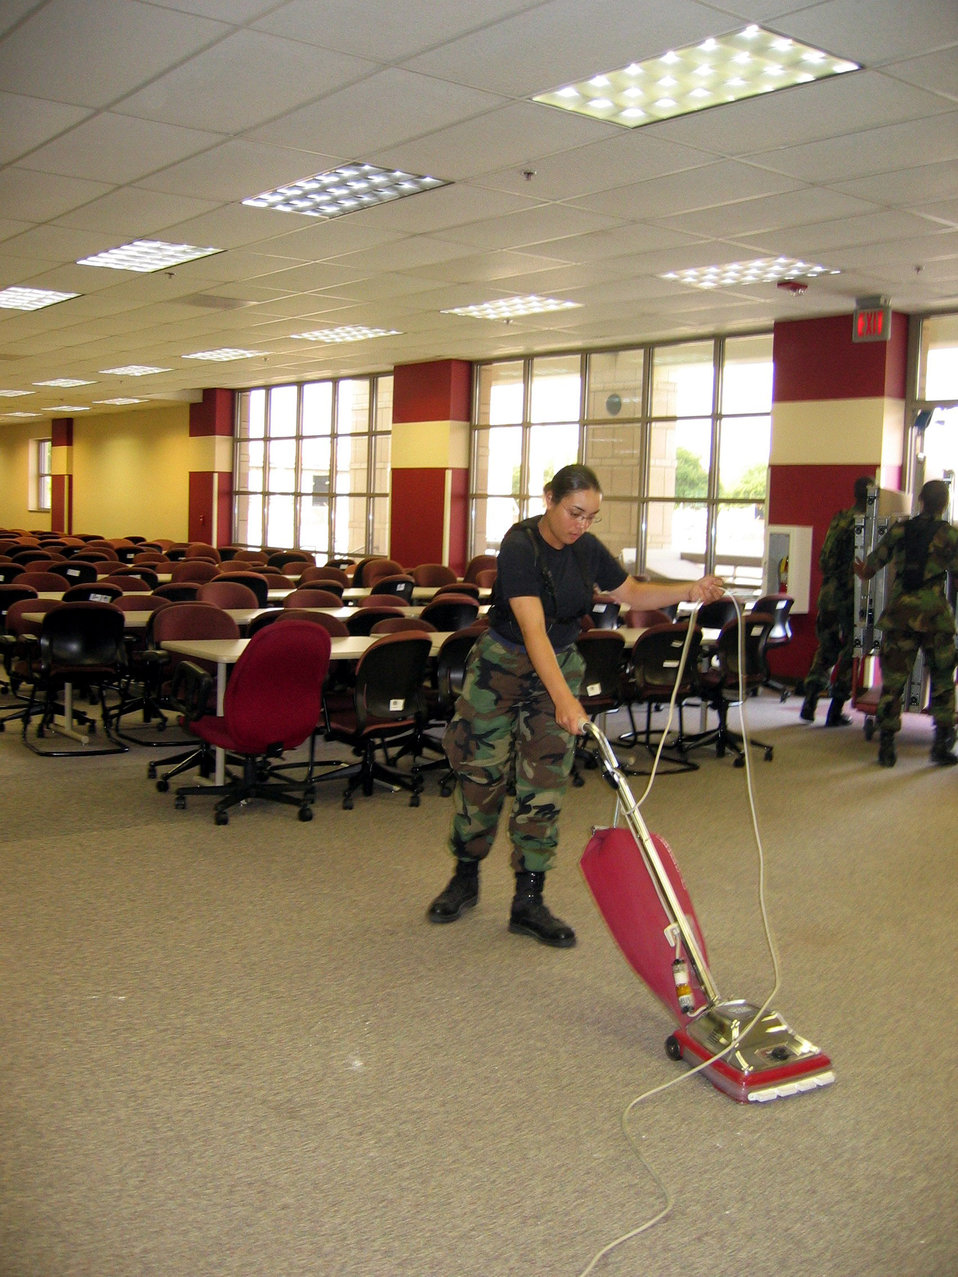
Lackland Airmen turn office areas into living spaces

SAN ANTONIO -- Airman Ebony Jenkins puts the final touches on the dining area for people displaced by Hurricane Katrina. In all, 200 Airmen from nearby Lackland Air Force Base helped tear down modular office furniture in a 350,000 square foot building and set up the cots. Airman Jenkins is assigned to the 320th Training Squadron.